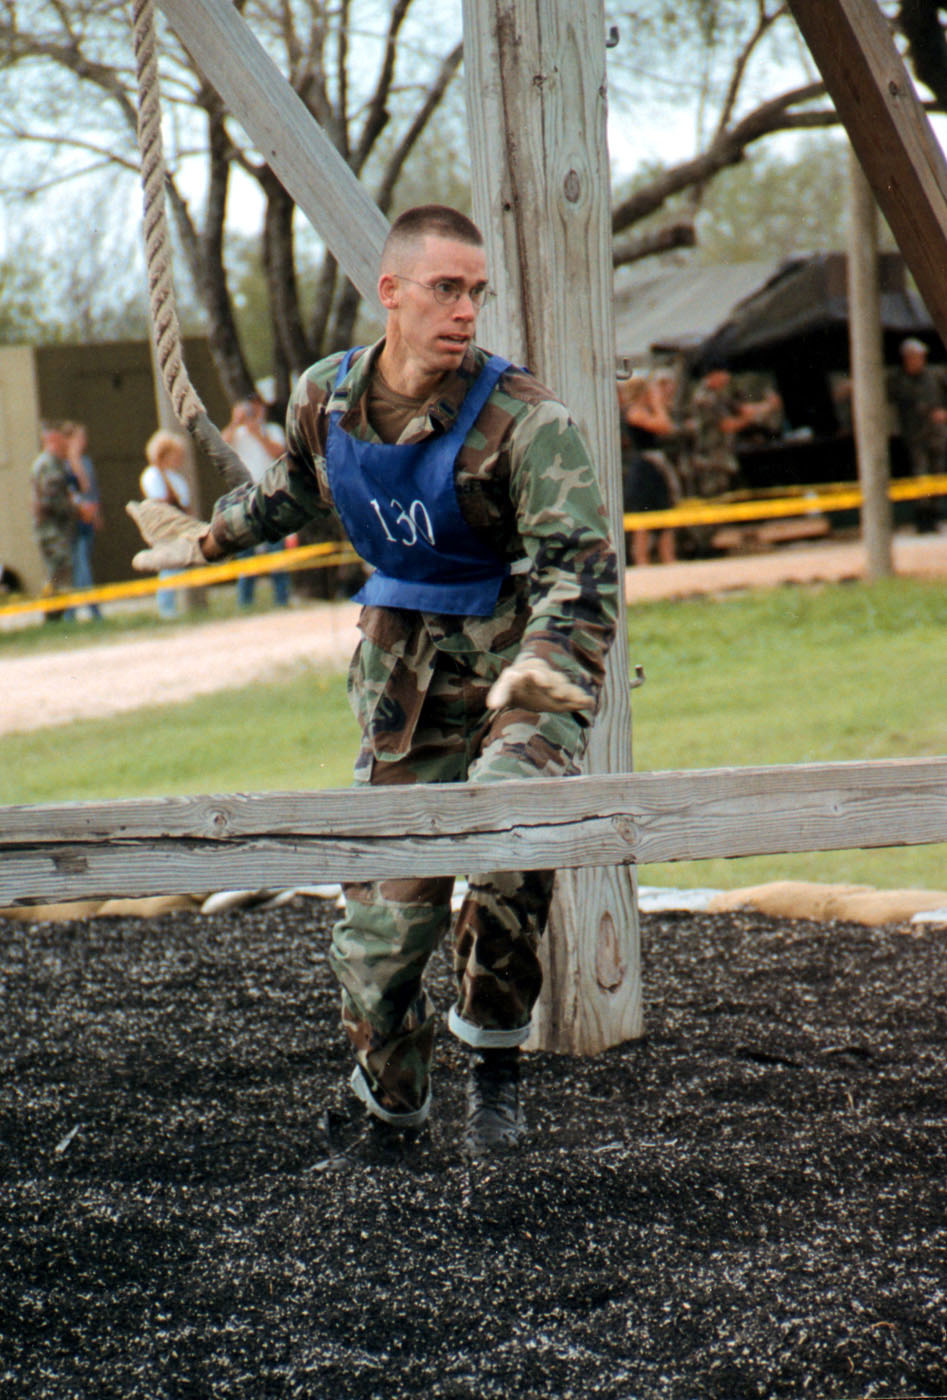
Gotta keep going

LACKLAND AIR FORCE BASE, Texas -- 1st Lt. Marcus Corbett, Air Force Space Command Defender Challenge team member, prepares to conquer the next obstacle after completing the